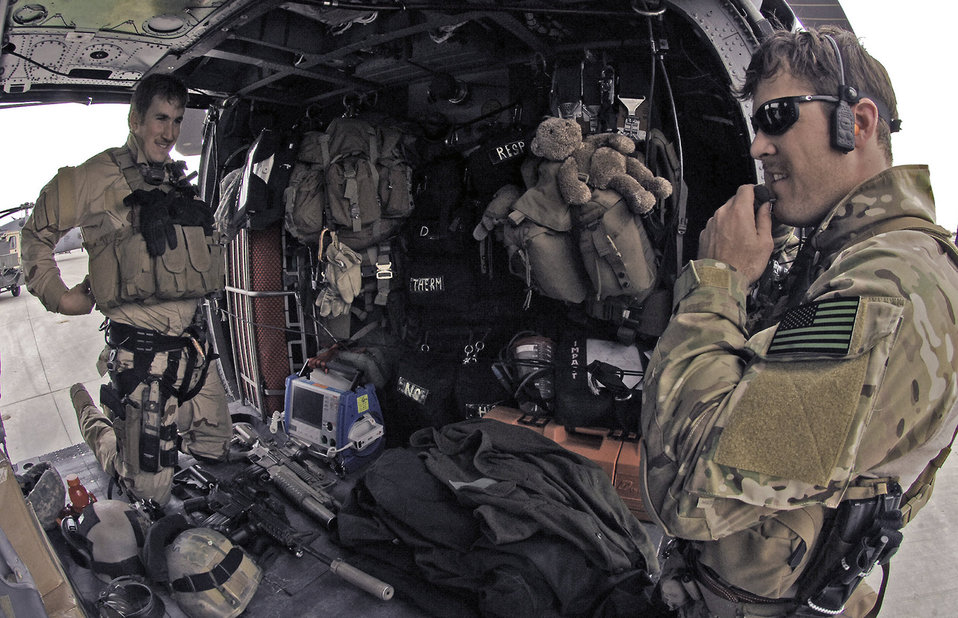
New York Guardsmen stay on alert to save lives

1st Lt. Brent McCall and Tech. Sgt. Jedediah Smith load up their gear for a training mission in Northeastern Afghanistan, April 20. In addition to an M-4 assault rifle, combat medical gear and body armor, Sergeant Smith also packs his four-year-old daughter Mia's pre-school class teddy bear. Lieutenant McCall is a 101st Expeditionary Rescue Squadron combat rescue officer, and Sergeant Smith is a 101st ERQS pararescueman.